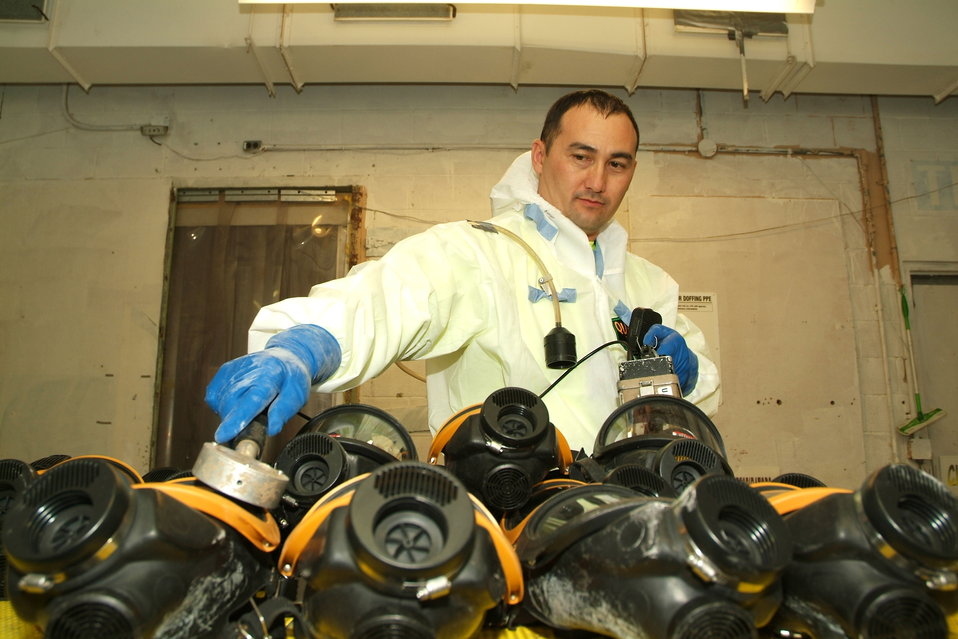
Technician Makes Safety a Top Priority for Paducah Recovery Act Workers

Radiation control technician Martin Troutt helps keep Recovery Act workers at DOE’s Paducah Site safe.

Troutt uses instruments to measure two types of radiation as well as rates of exposure for the workers, who clean up some of the site’s most contaminated old buildings so they can be torn down.